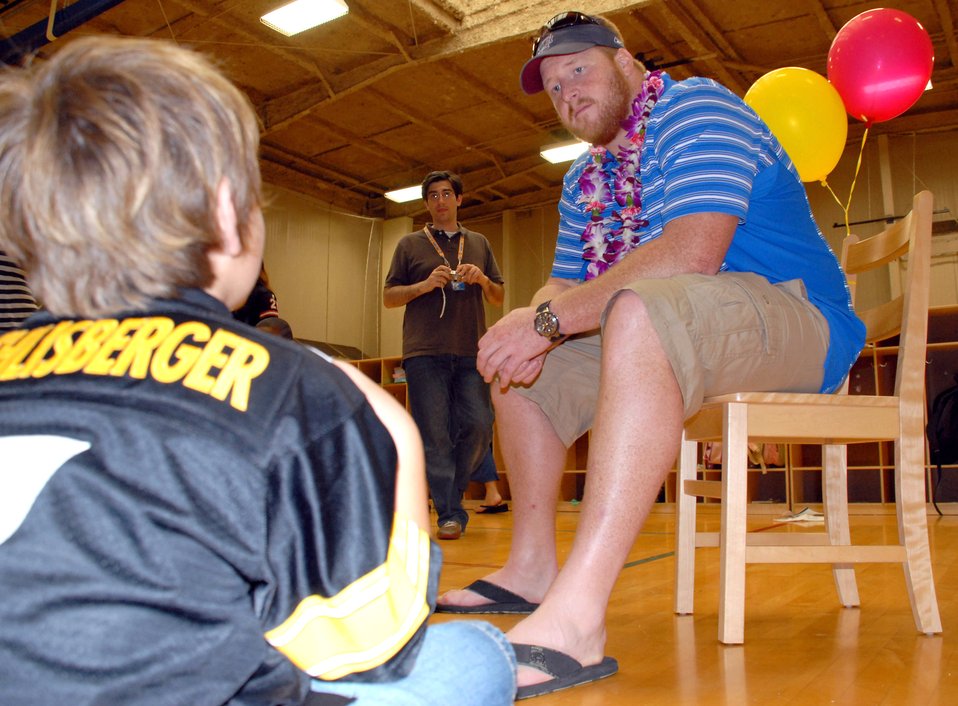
Airmen support Pro Bowl

New England Patriots center Dan Koppen talks with the children in the youth center's before and after school program during his NFL Pro Bowl player appearance Feb. 7 at the youth center at Hickam Air Force Base, Hawaii.